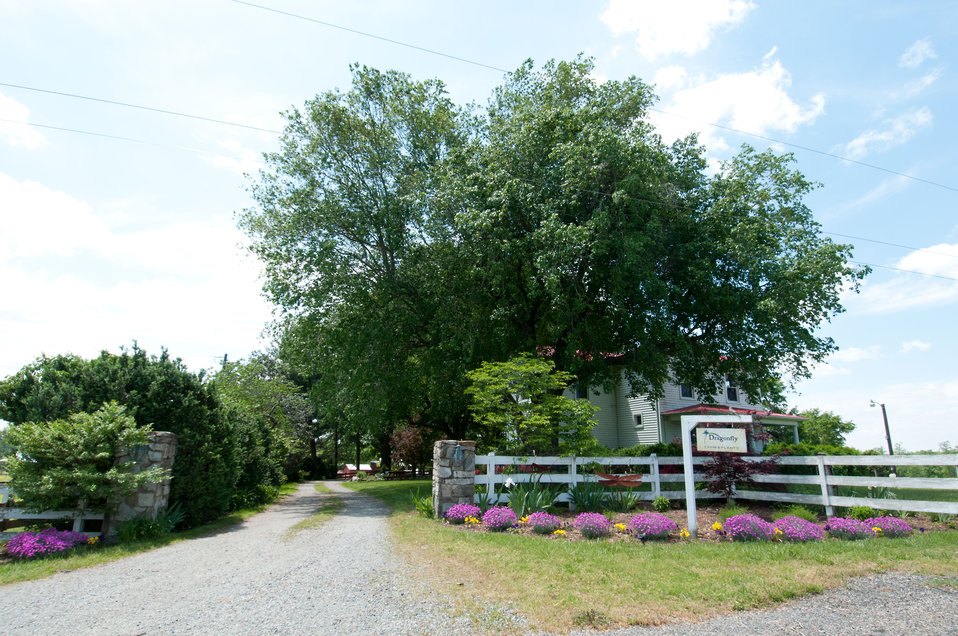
Dragonfly Farm in Beaverdam, VA, on Friday, May 6, 2011 is one of dozens of suppliers associated with Lulus Local Food website and suppliers participating with Fall Line Farms food hub. Together, they offer a wide variety of household food staples and specialty items. Members pick their customized orders from an ever changing seasonal inventory of fruits, vegetables, meats, soaps, eggs, cheeses, flowers, honey, pastas, sauces, syrups, baked goods, mushrooms, flour and grains from the Richmond area.